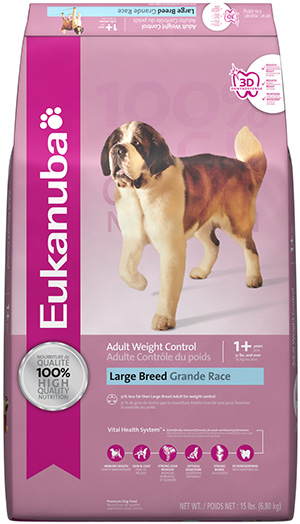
RECALLED – Dog and Cat foods - Dry

August 14, 2013 – Product Recall – P&G Voluntarily Recalls Limited Quantity of Dry Pet Food Due to Possible Health Risk.